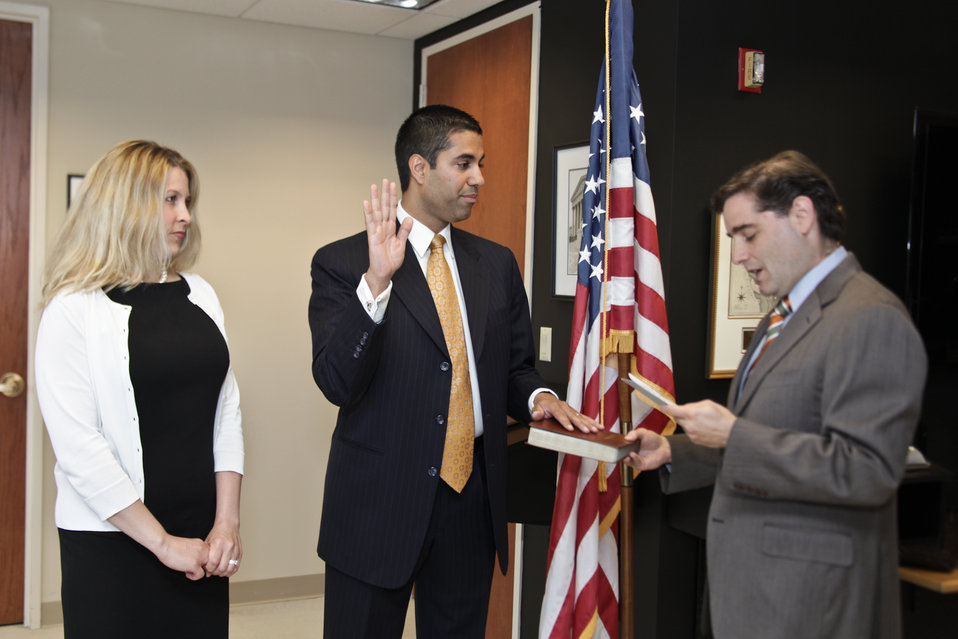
Commissioner Ajit Pai Being Sworn In by FCC Chairman Genachowski

FCC Chairman Genachowski swears in Ajit Pai as a new Commissioner at the FCC headquarters in Washington, DC.

May 14, 2012.